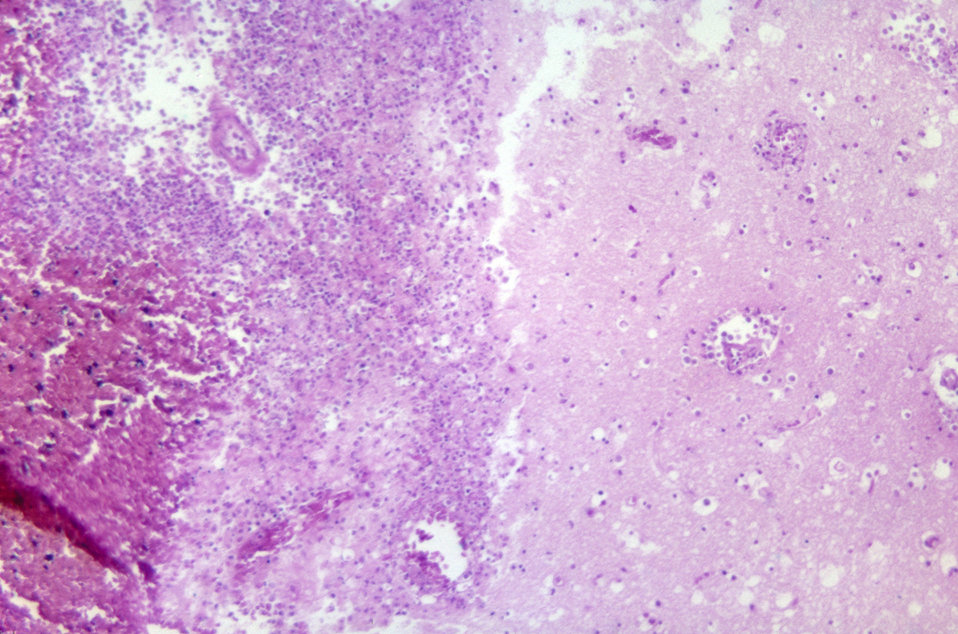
This photomicrograph of a brain tissue specimen depicts the cytoarchitectural changes associated with a free-living amebic infection, which may have been caused by either a Naegleria fowleri, or an Acanthamoeba sp.. The organisms were found in the brain of a Japanese Prisoner of war in the 1950's, before we knew about the free living amebae, and how they attack the brain. When free-living amebae infect the brain or spinal cord, the condition is known as primary amebic meningoenceohalitis, or PAM. Free-living amebae belonging to the genera Acanthamoeba, Balamuthia, and Naegleria are important causes of disease in humans and animals, though only one specie of Naegleria, Naegleria fowleri, causes disease in humans.